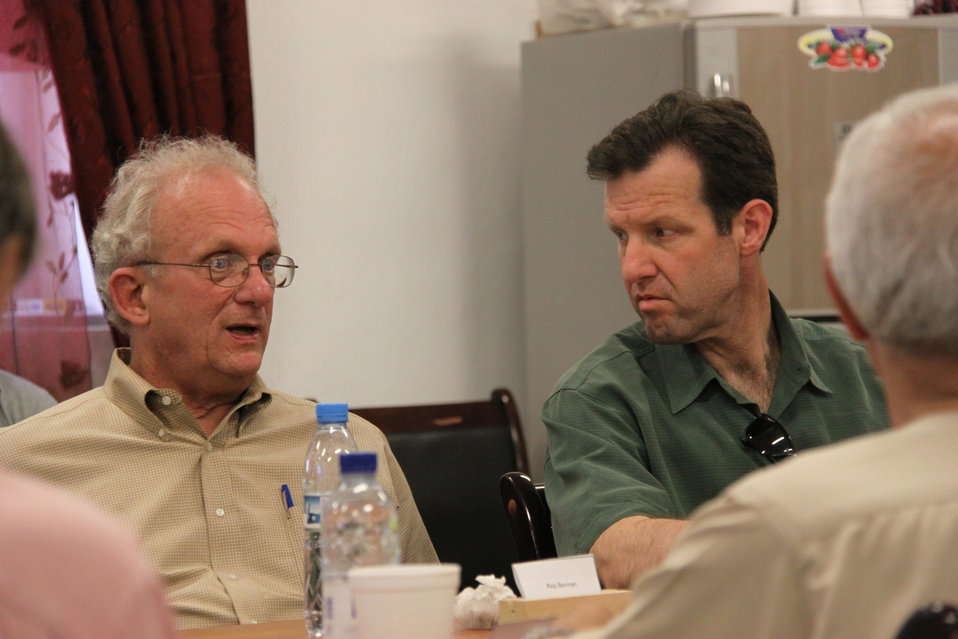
Meeting with Local Leaders in Kandahar